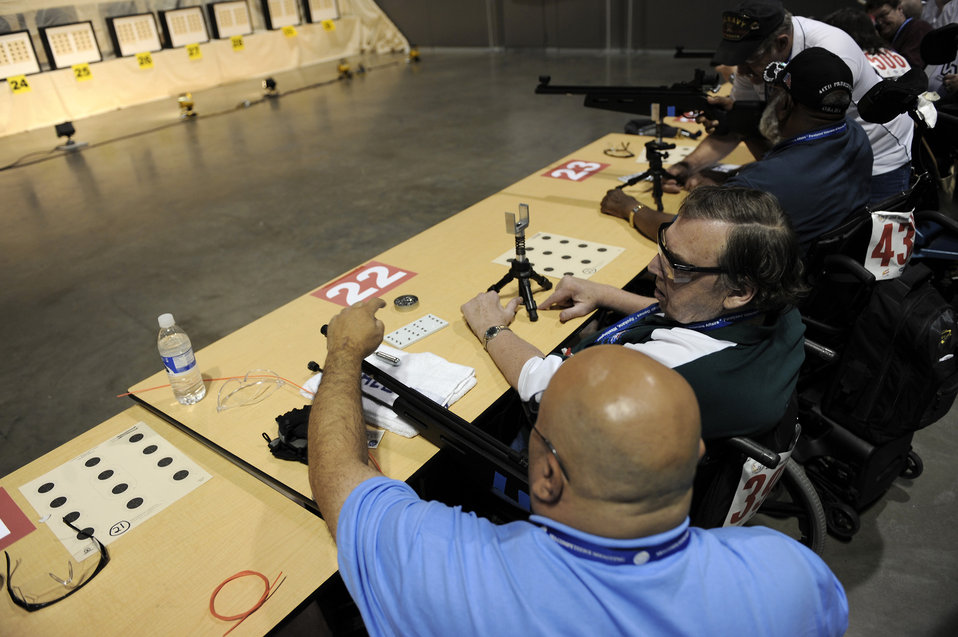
Wheelchair athletes participate in national veteran's competition

William Ethridge gets assistance from a volunteer as he competes in the air gun competition during the 29th National Veterans Wheelchair Games July 14 in Spokane, Wash. Mr. Ethridge is an Air Force veteran and resides in Spokane. The 29th National Veterans Wheelchair Games runs through July 19.